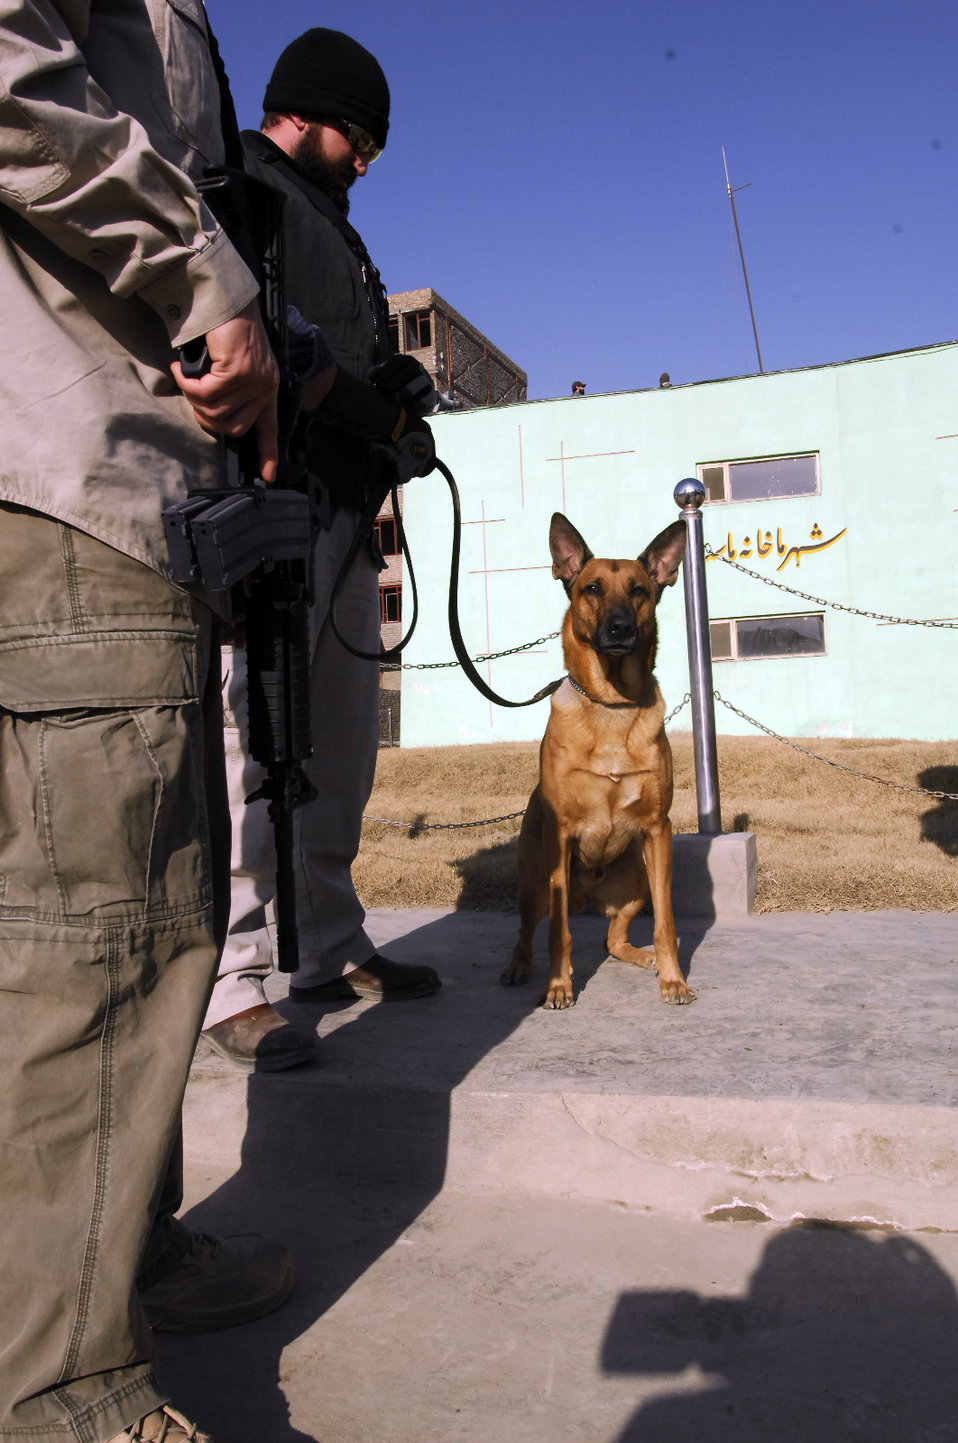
Care66